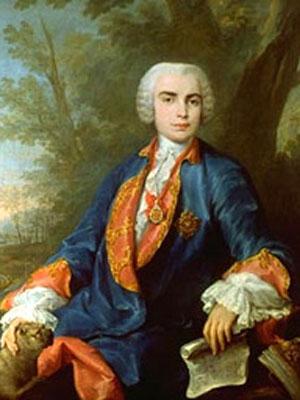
CarloBroschi